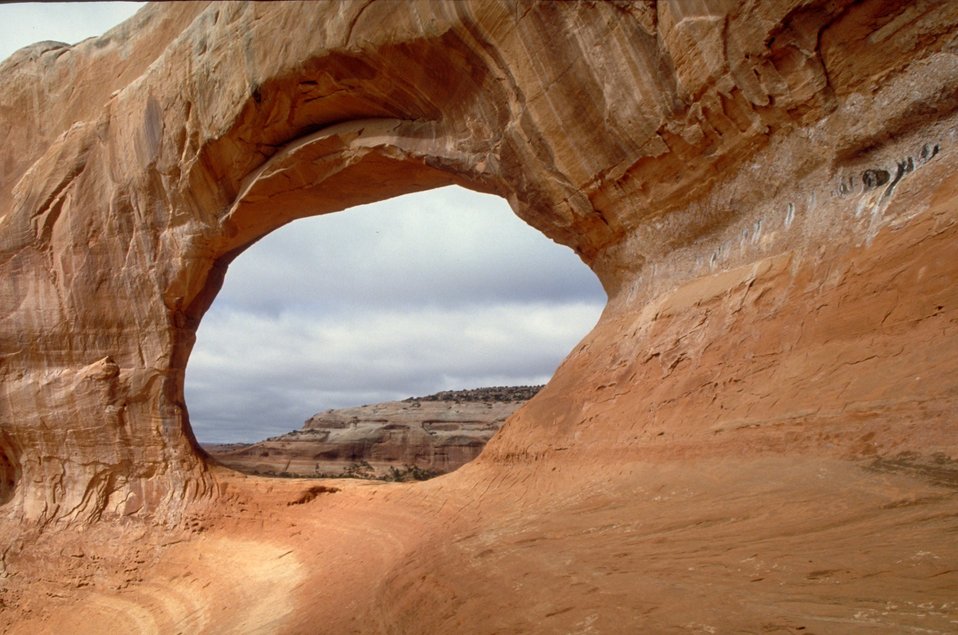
Wilson Arch south of Moab, Utah.